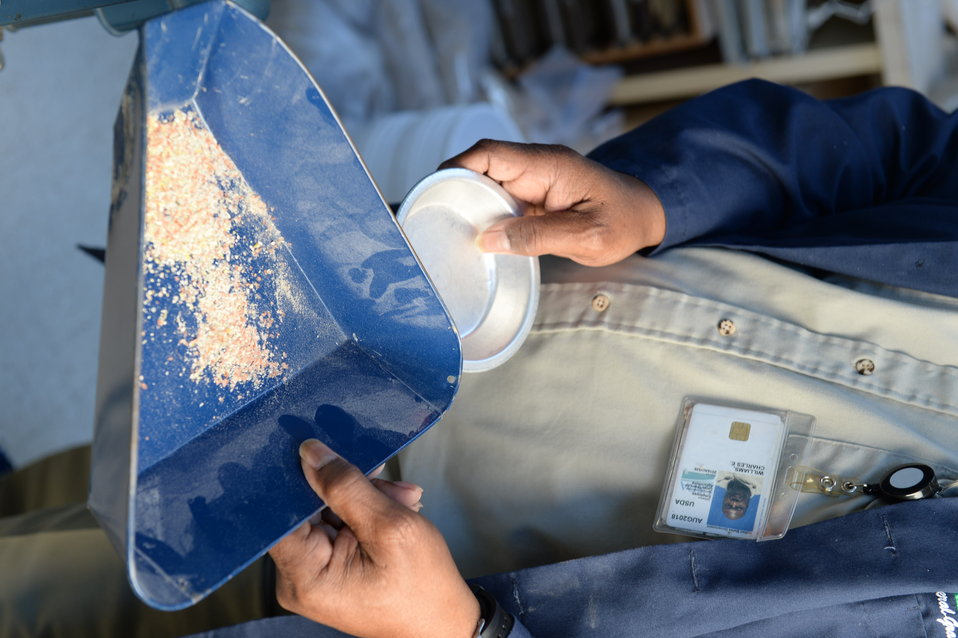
A U.S. Department of Agriculture (USDA) Grain Inspection, Packers and Stockyards Administration (GIPSA) Federal Grain Inspection Service (FGIS) scientist tests corn at the FGIS inspection laboratory in New Orleans, LA on Monday, Nov. 18, 2013.